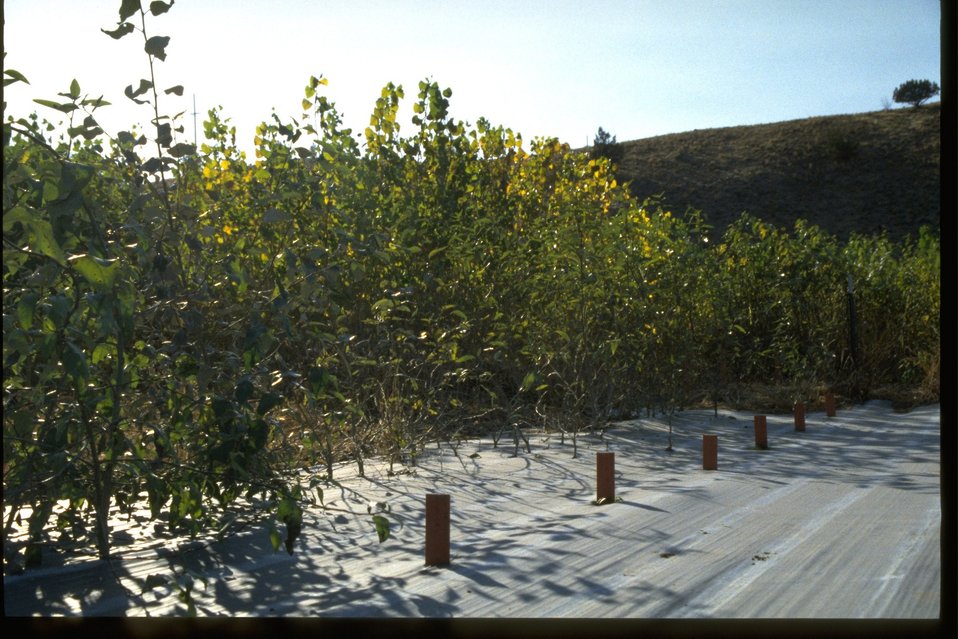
Cottonwood plantation near Clarno Road. Ground cloth under trees.